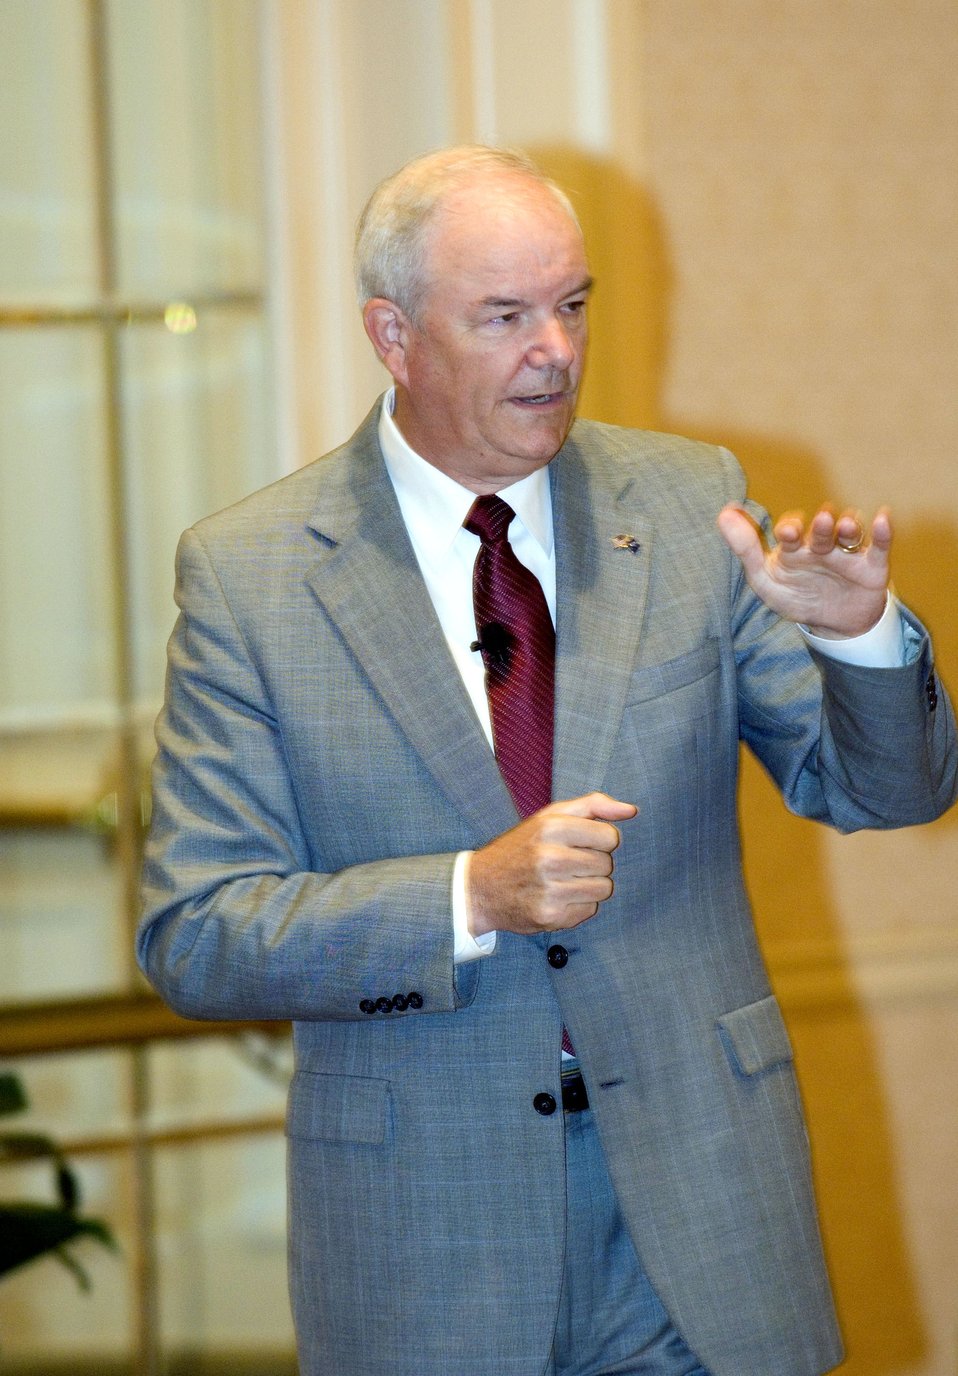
Wynne: We are logisticians of information

Secretary of the Air Force Michael W. Wynne speaks to the newest group of brigadier general selectees and their spouses during the Senior Leaders Orientation Course in Washington, D.C., on July 31. The weeklong course prepares future generals for issues they may encounter when they take on their new leadership role.